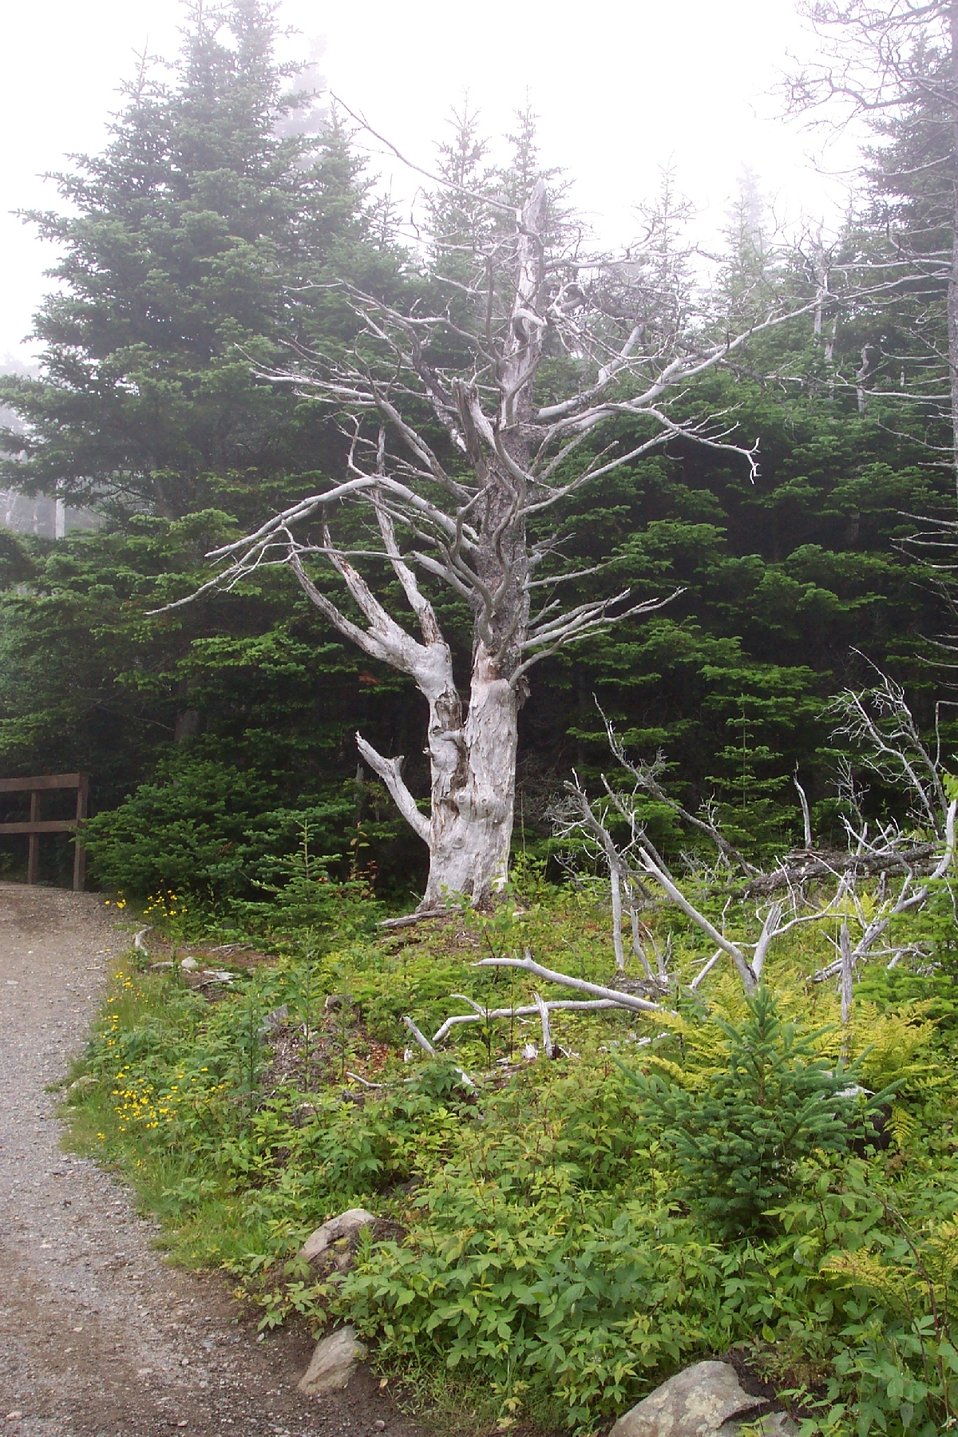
Another good tree for a Harry Potter story at West Quoddy Head.